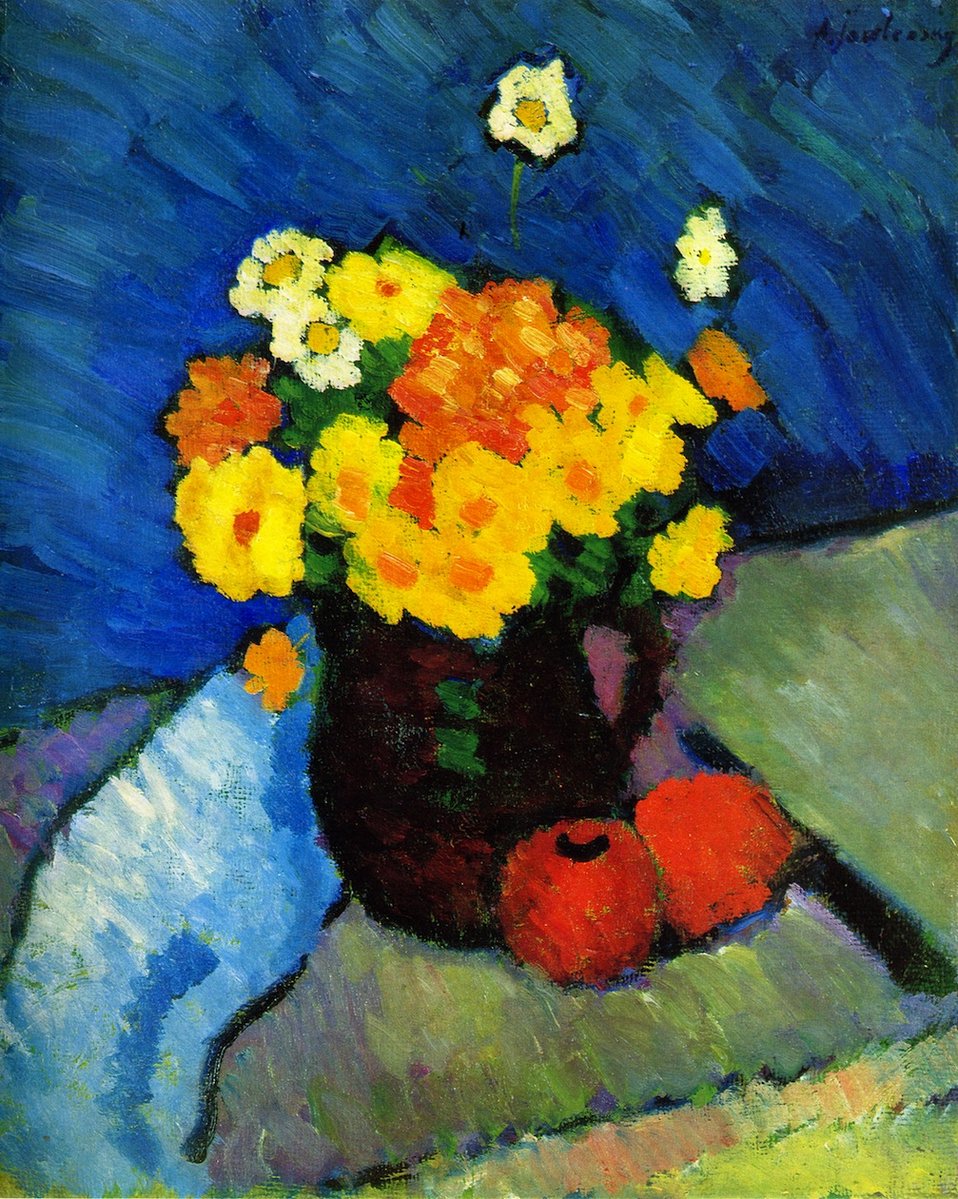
Alexej von Jawlensky - Blumenstilleben